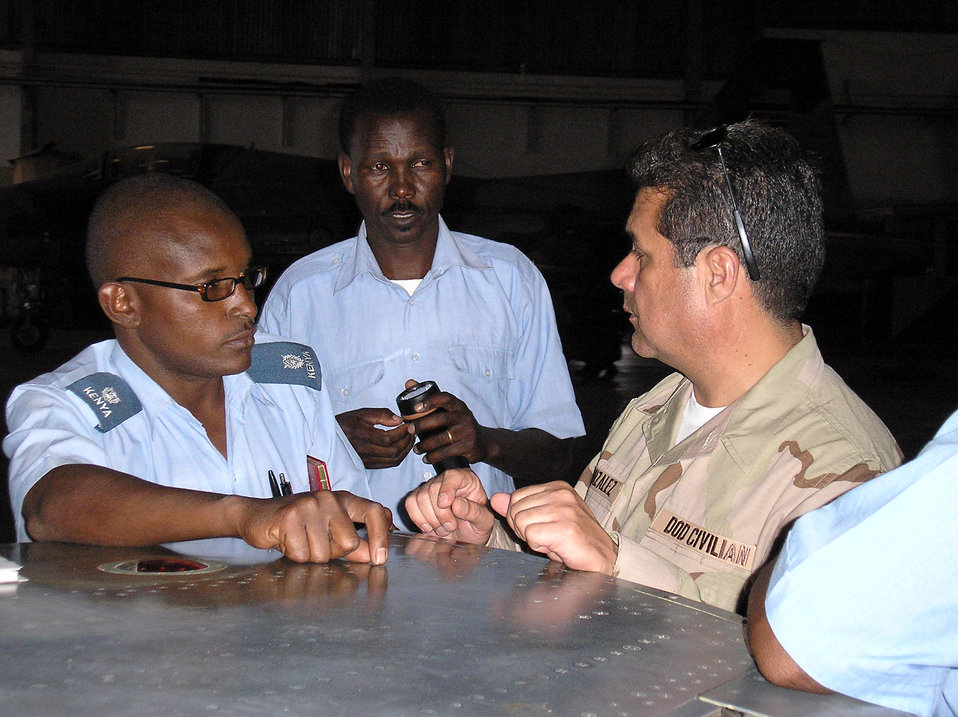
Air Force, Kenyan maintainers turn wrenches together

Mr. Mateo Gonzales (right) discusses maintenance inspections with members of the Kenyan air force at Laikipia Air Base in Kenya. Mr. Gonzales is an F-5 fighter aircraft maintenance trainer at the Inter-American Air Forces Academy at Lackland Air Force Base, Texas. He was part of an eight-man Air Force team visiting the East African nation to March 21 to 28 to improve aircraft maintenance processes.